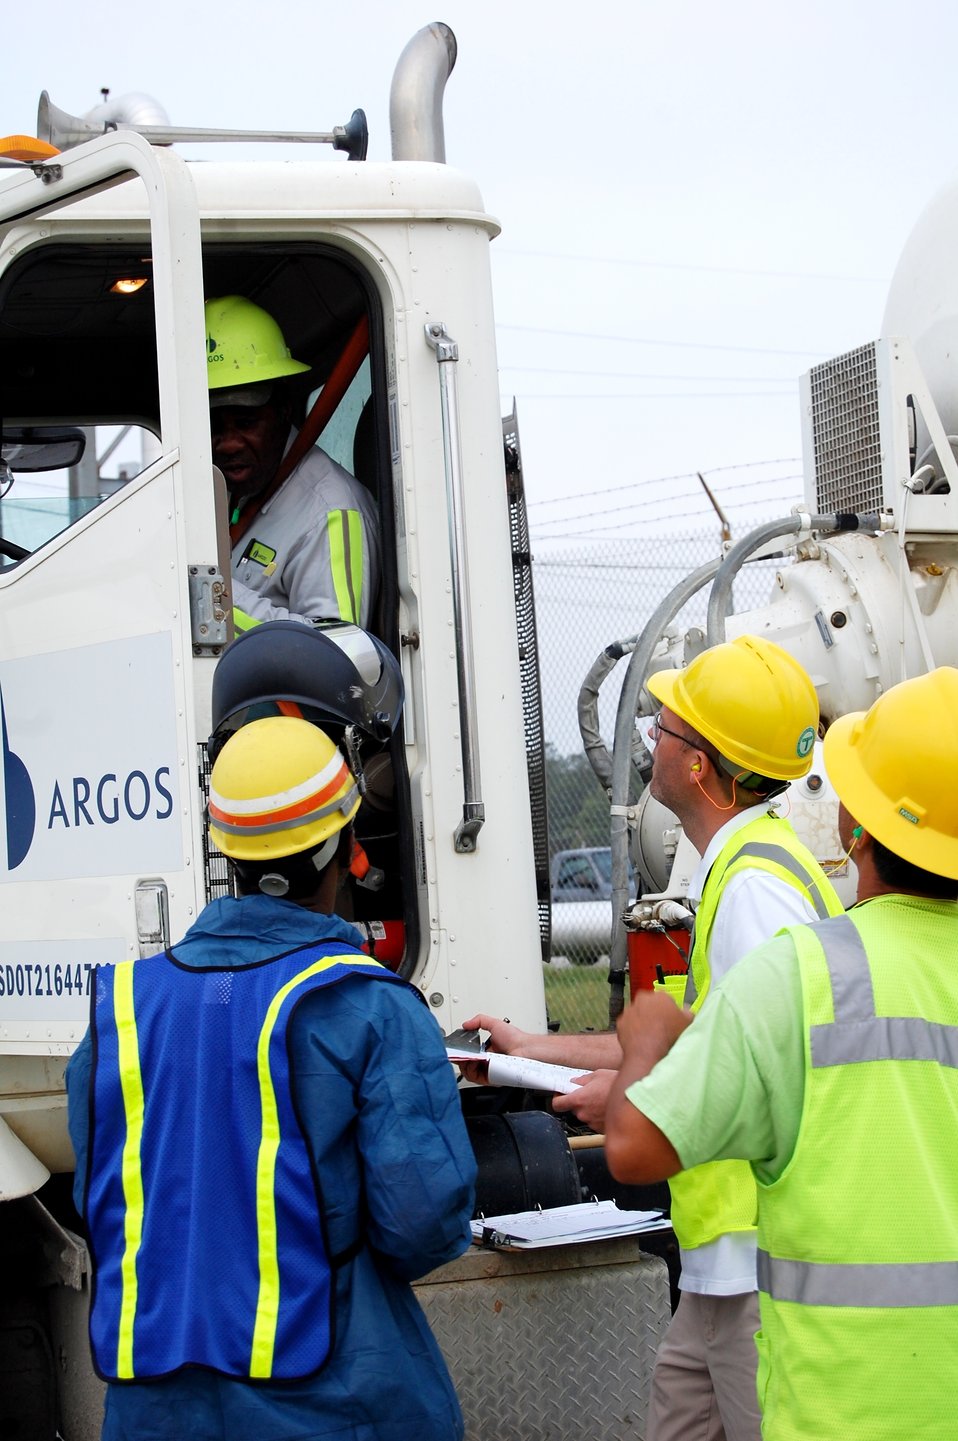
Workers Pour 1 Million Gallons of Grout into Massive Tanks

Cement trucks transport a specially formulated grout that is pumped into waste tanks.

Workers have poured more than 1 million gallons of a cement-like grout into two underground radioactive waste tanks, moving the Savannah River Site (SRS) nearer to closing the massive structures.